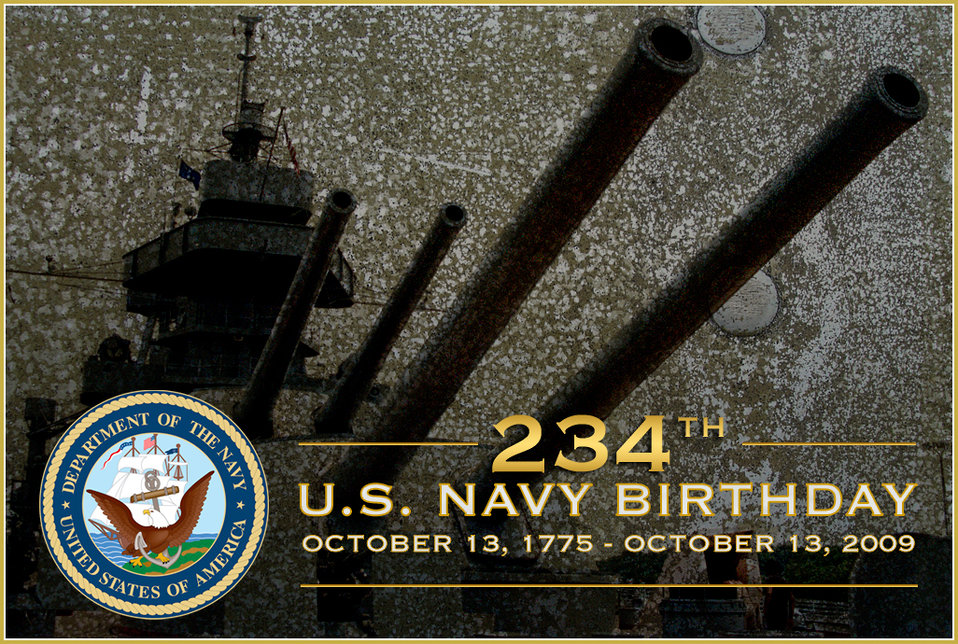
Navy Birthday

The U.S. Navy celebrates 234 years of service to the nation Oct. 13.